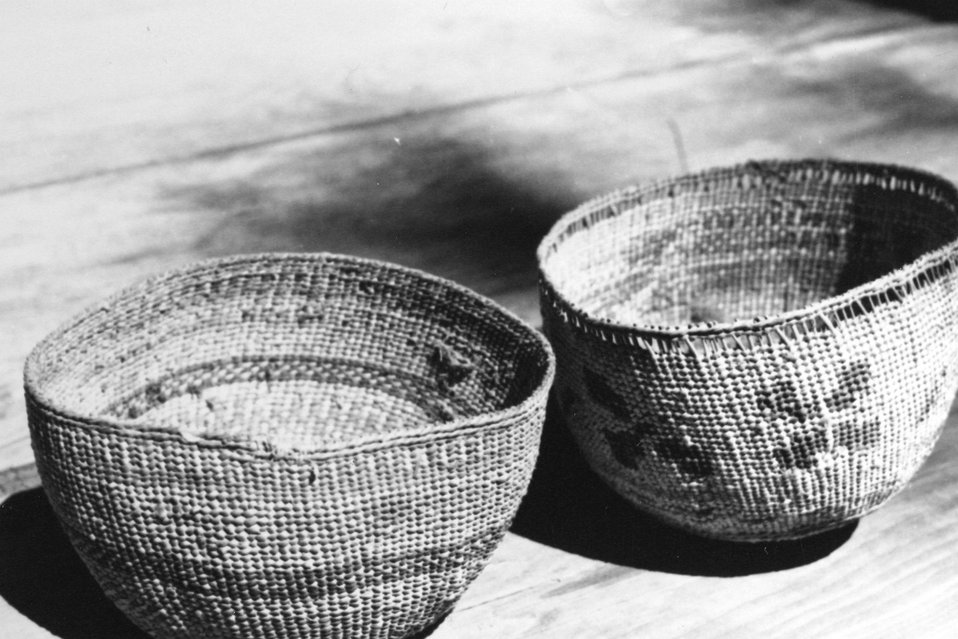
A basket made by Adeline Billings.